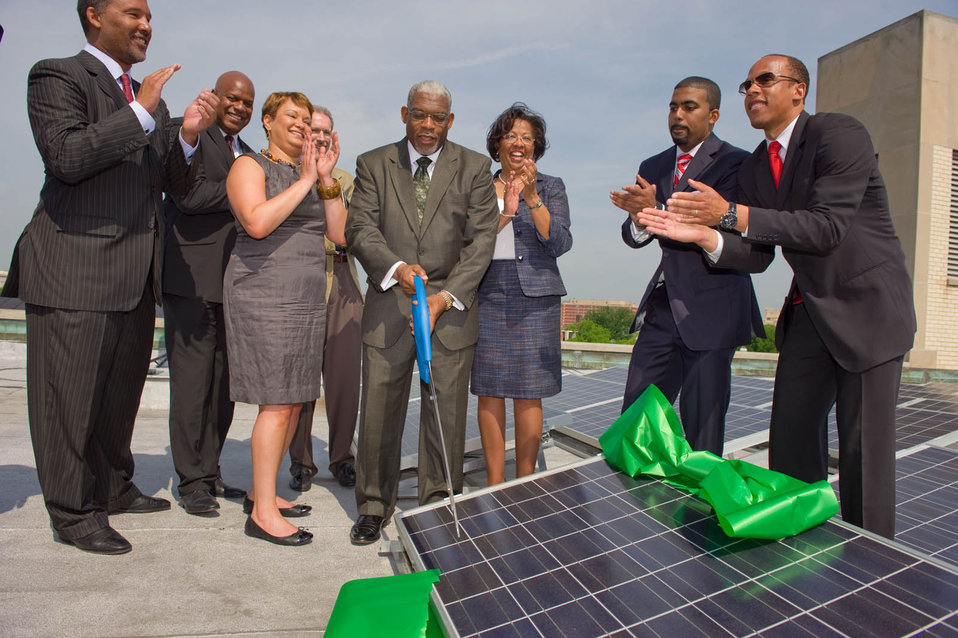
2011-05-03 FlaAveSolar 021